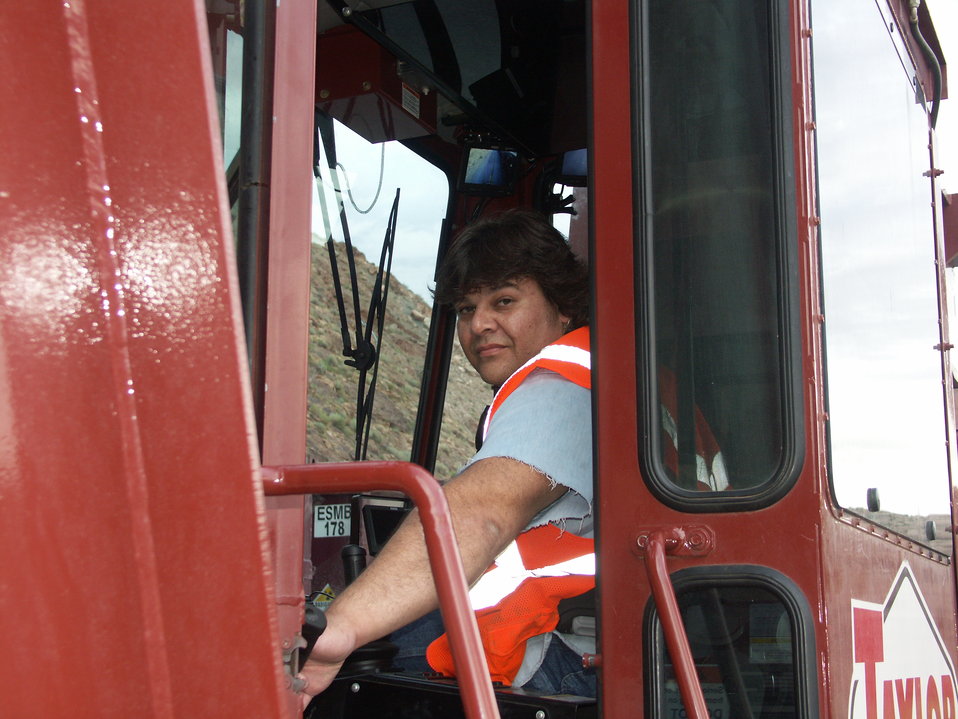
Leon Tangren

For 22 years, Leon Tangren had worked for a company in Grand Junction, Colo., until it shut down and sold its operations to an out-of-state firm. But Tangren found a new opportunity in the Recovery Act, and was hired to prepare additional shipments of mill tailings at the Moab Uranium Mill Tailings Remedial Action Project.